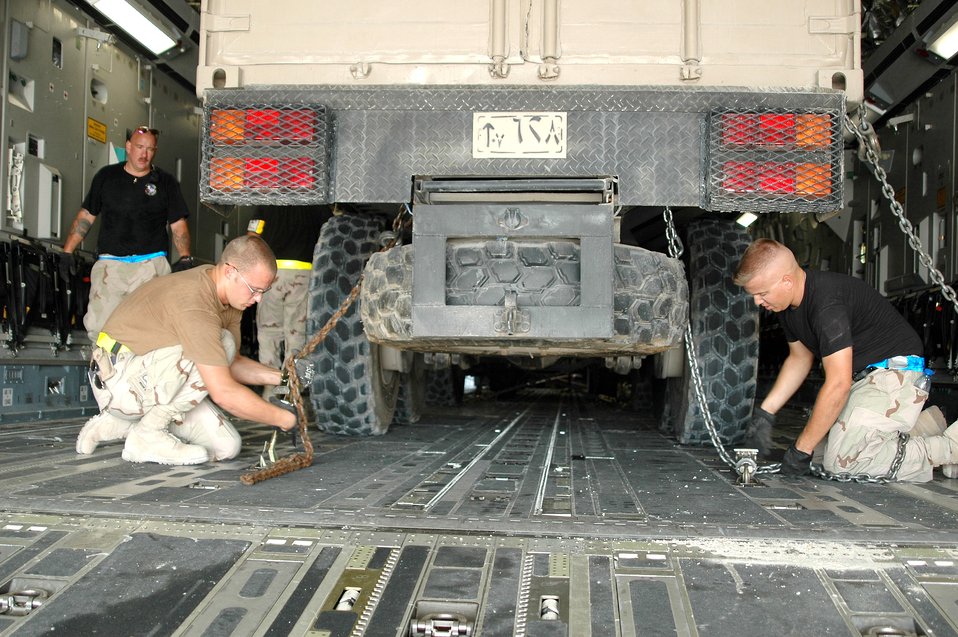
Pakistan relief efforts

SOUTHWEST ASIA -- Airman 1st Class Ryan Pappas (left foreground) and Senior Airman James Depew secure Qatari earthquake relief equipment bound for Pakistan to the cargo deck of C-17 Globemaster III. Staff Sgt. Ken Schoen observes the procedures. The Airmen are part of the 8th Expeditionary Air Mobility Squadron.